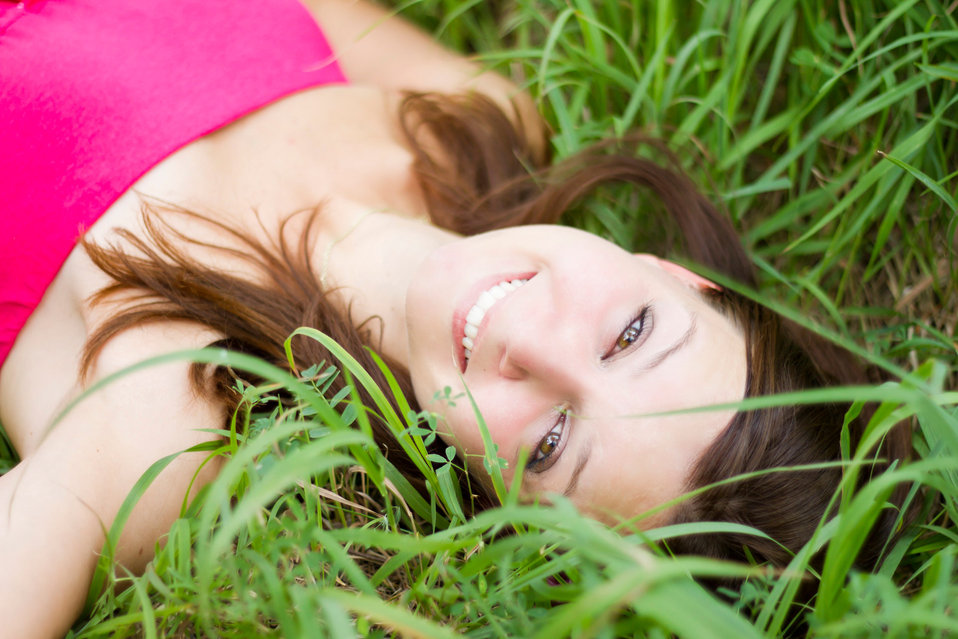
Beautiful young girl.